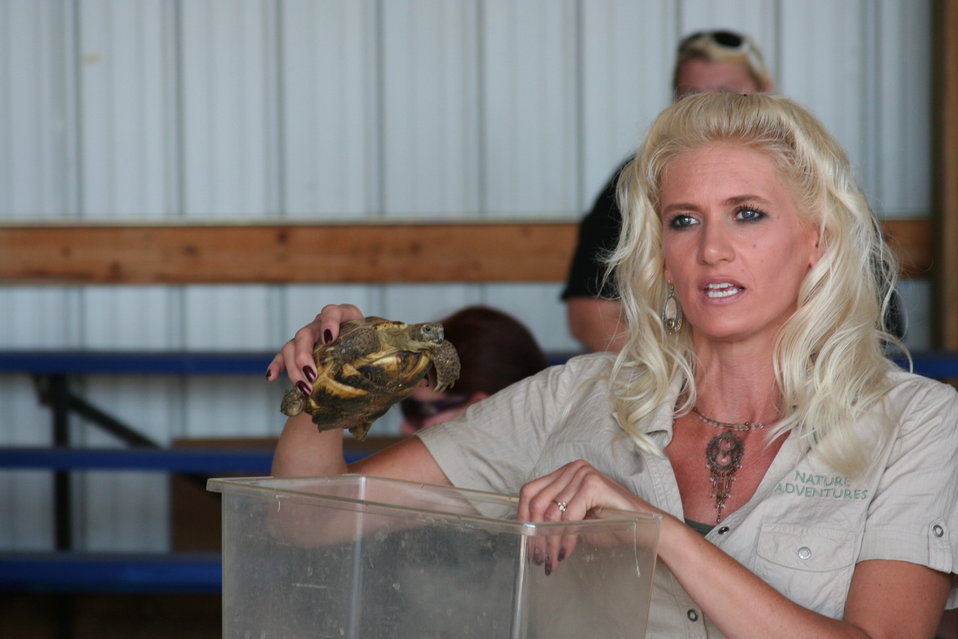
2011 Huron Prairie Fest